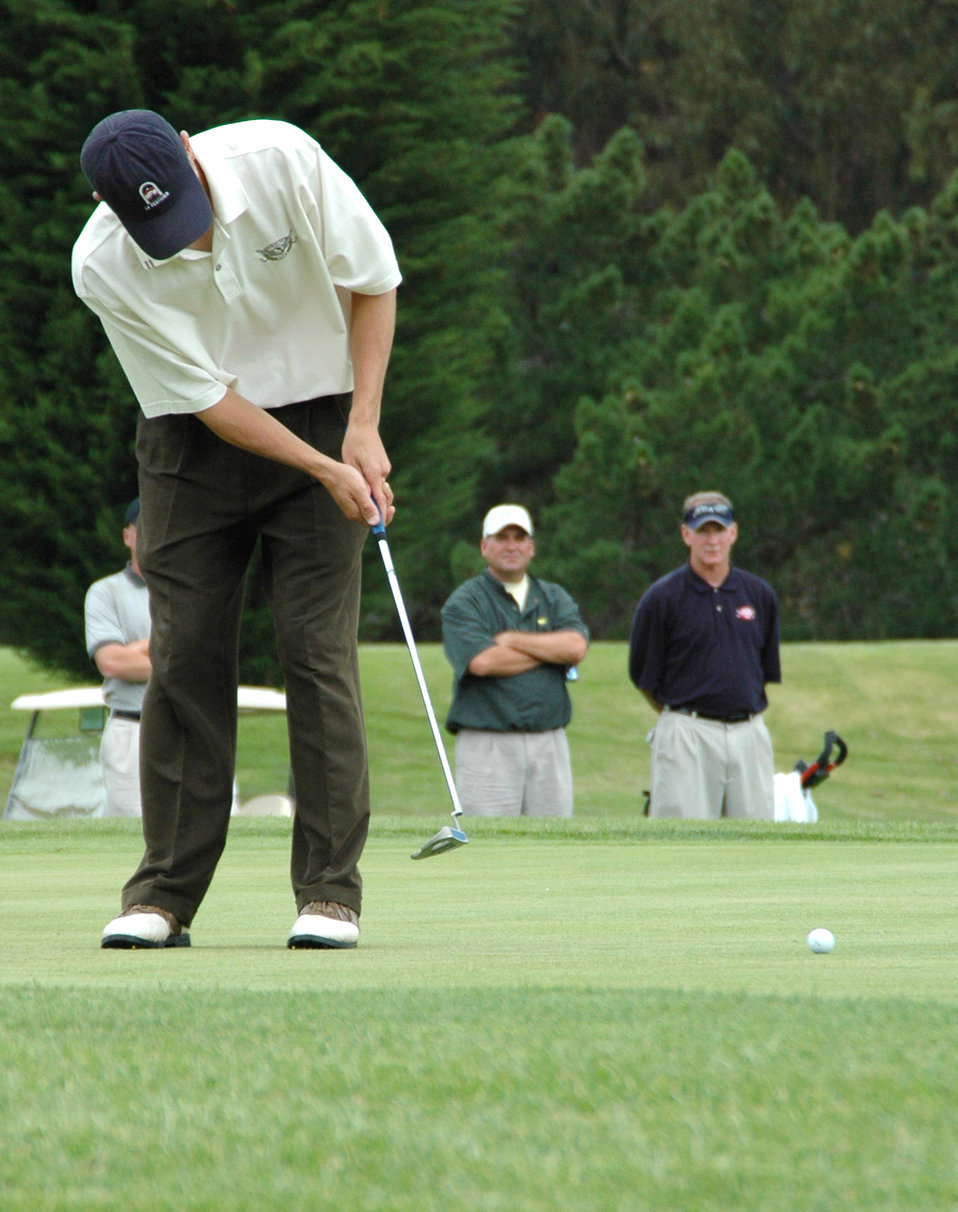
Vandenberg golfers exploit home course advantage

Geoffrey Mann drops in a 15-foot putt on the 18th hole that pushed the 2006 Air Force Golf Championship match into a playoff Aug. 4 at Marshallia Ranch Golf Course, Vandenberg Air Force Base, Calif.